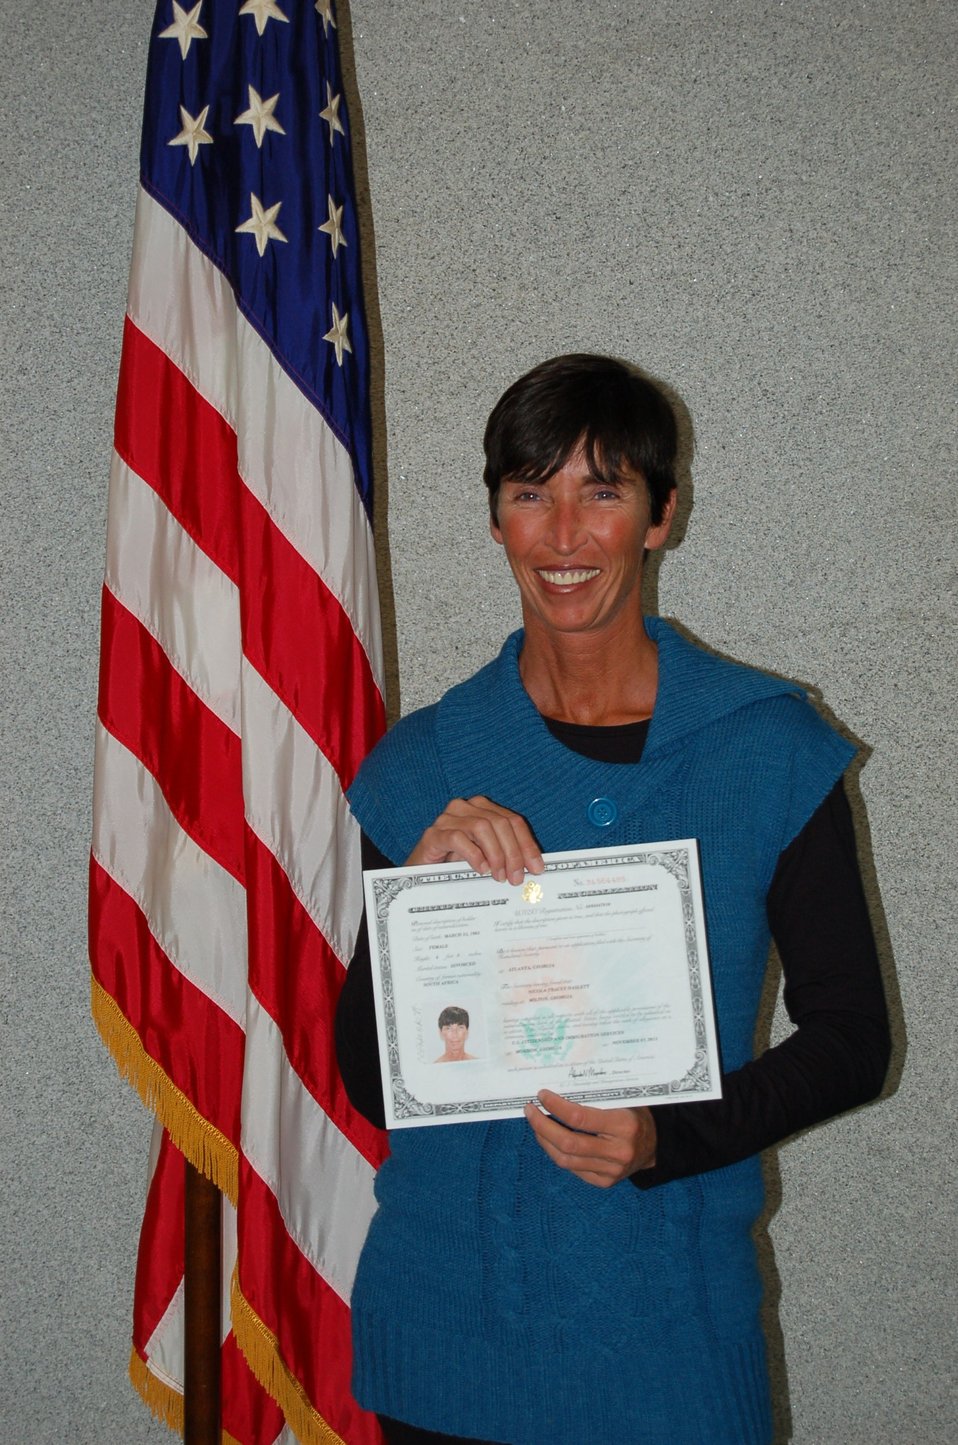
New Citizens